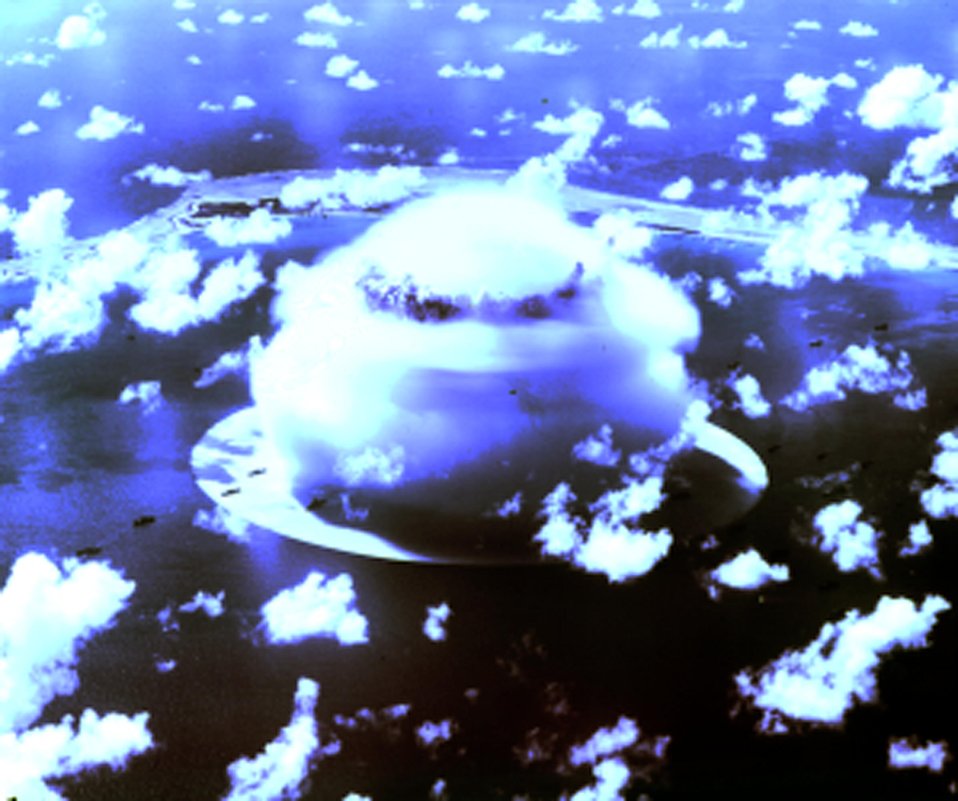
Baker Day at Bikini Atoll, 25 July 1946.